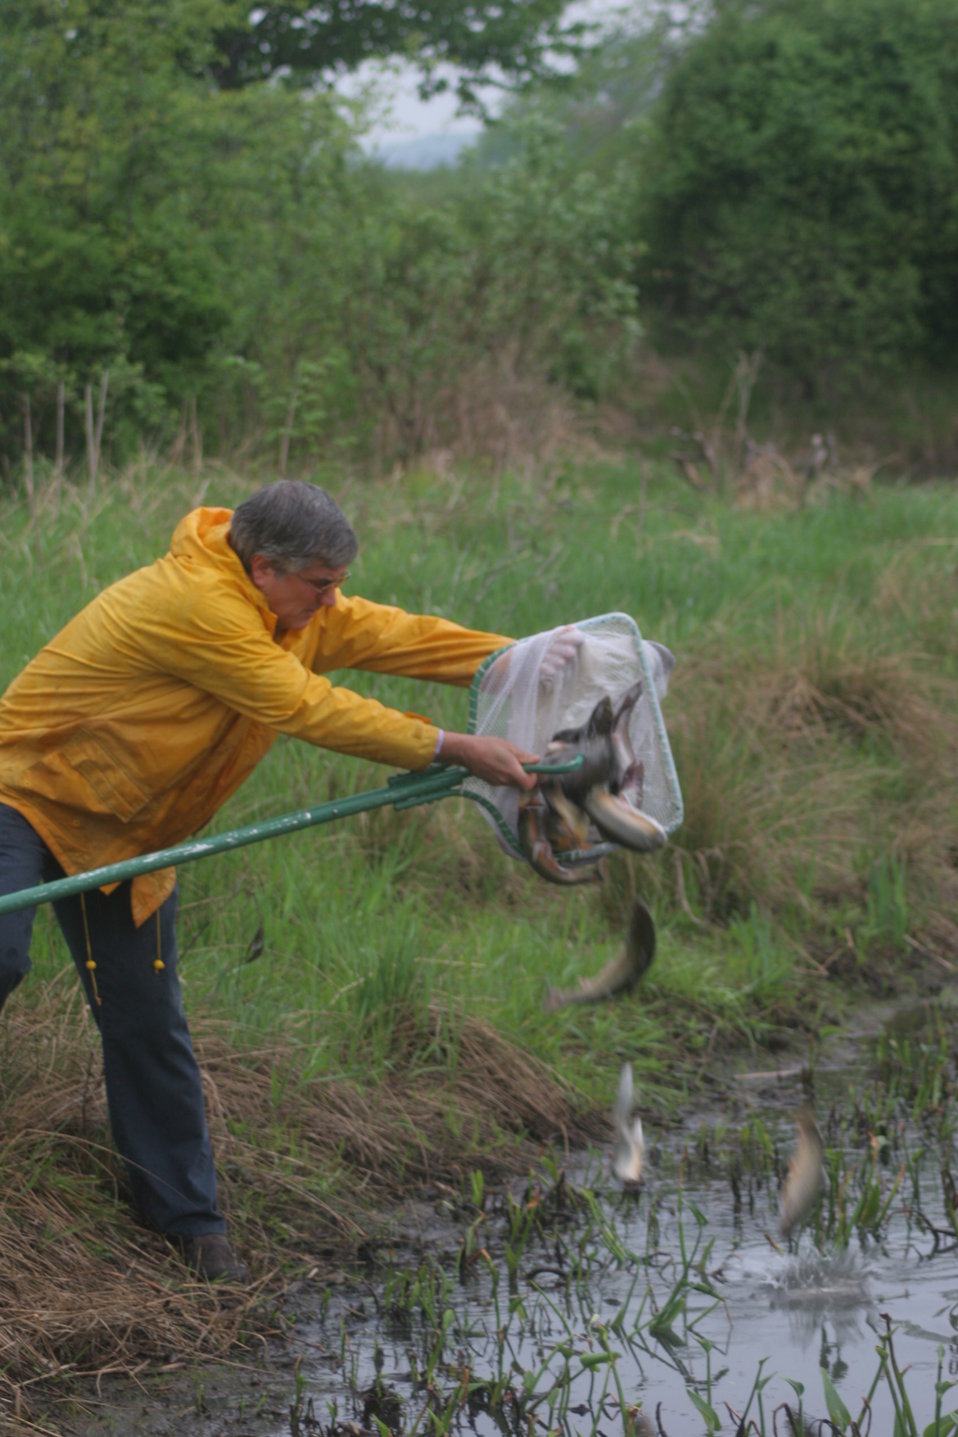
Stocking the pond with Brook Trout

Fishing event at U.S. Fish and Wildlife Service Regional Office in Hadley, MA